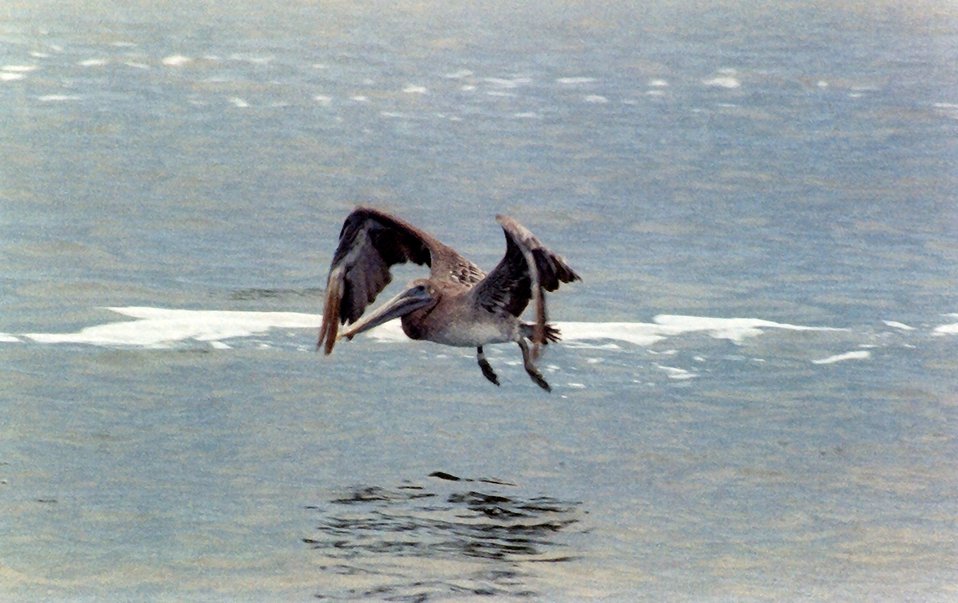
Pelican over Albemarle Sound.